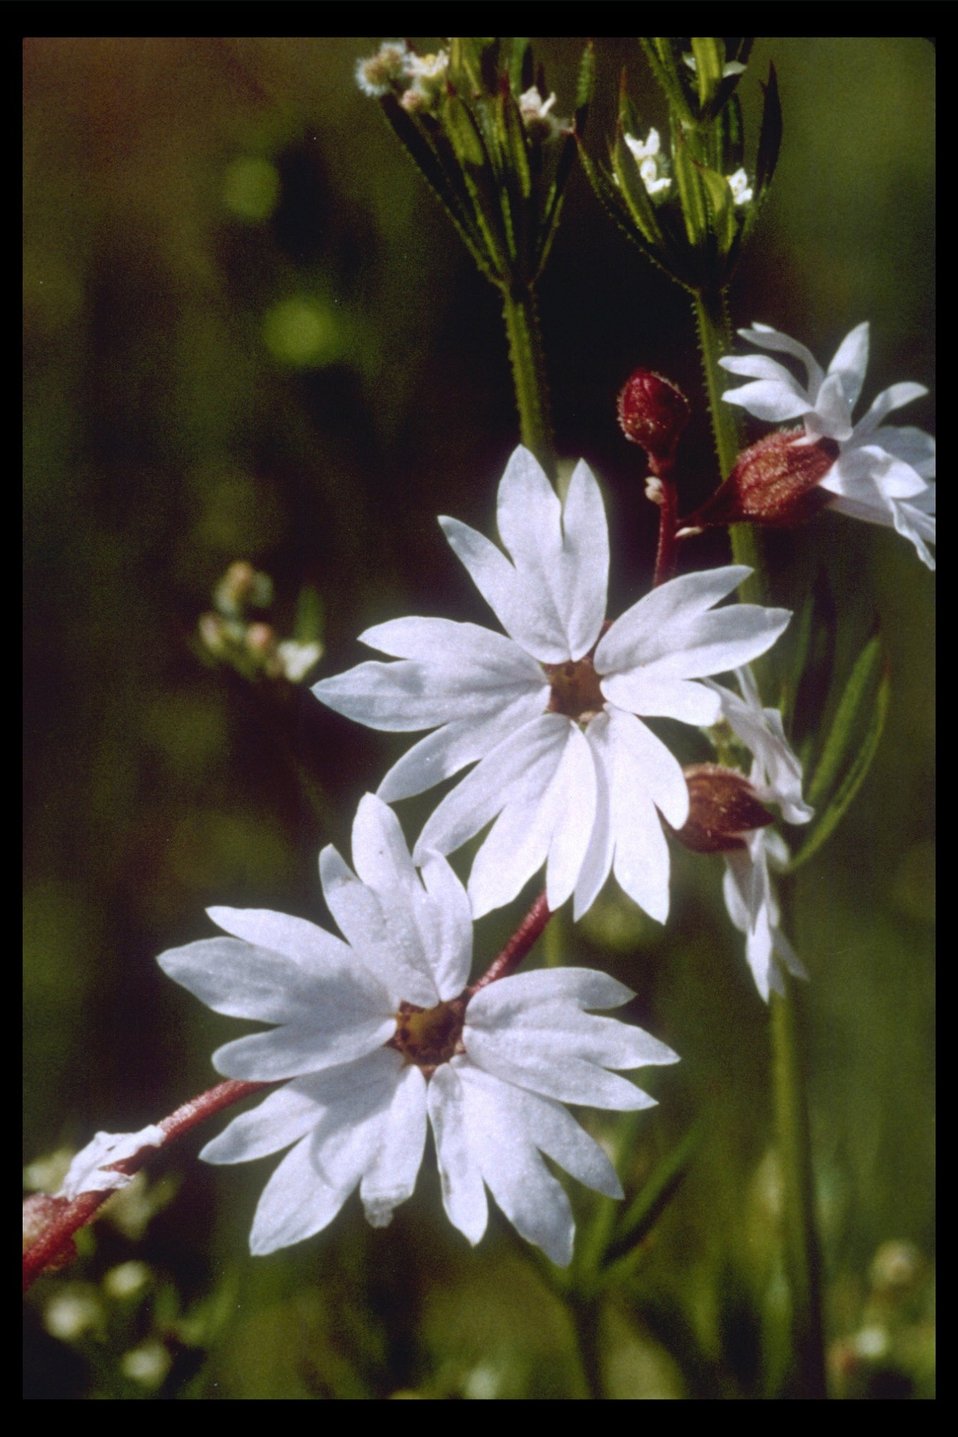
Prairie Star (Lithophragma parviflorum) found at Lower Table Rock summit.